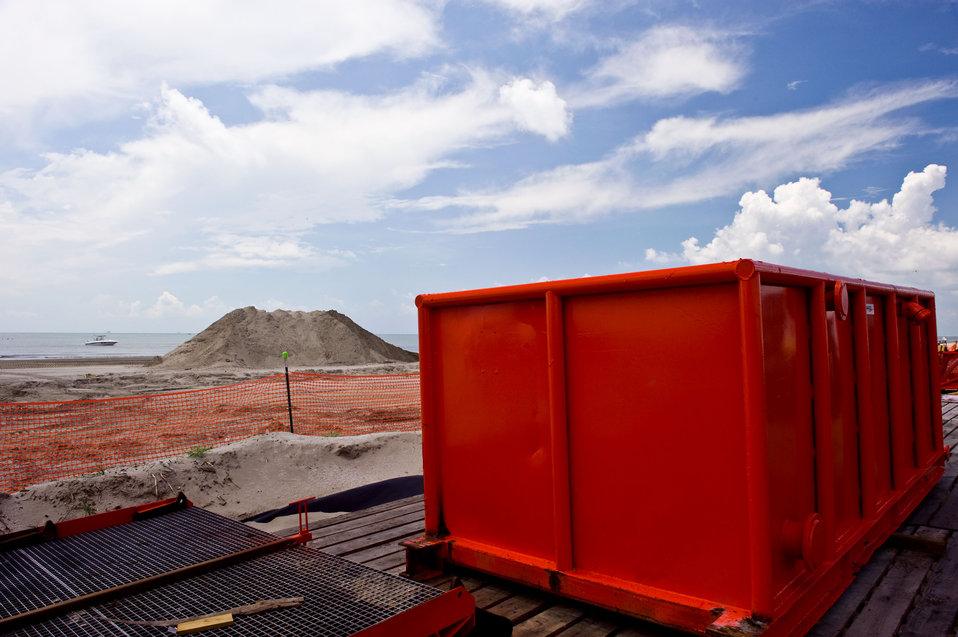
August 7, Container waits near beach for oil waste

Oily waste collected on beaches and shoreline areas is bagged and placed into these containers for shipment and diposal to a regulated landfill.